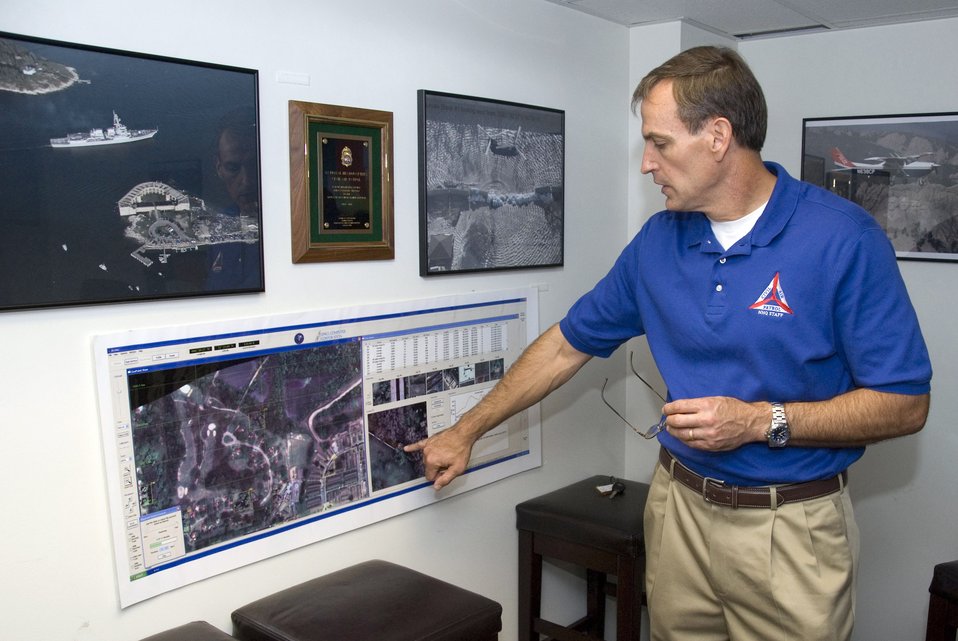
CAP provides rescue resources during emergencies

John Salvador, Civil Air Patrol's director of operations, describes the image capabilities of the Airborne Real-Time Cueing Hyperspectral Enhanced Reconnaissance system at the CAP National Operations Center at Maxwell Air Force Base, Ala., Sept. 16. The system is used to conduct aerial surveys for rescue missions.